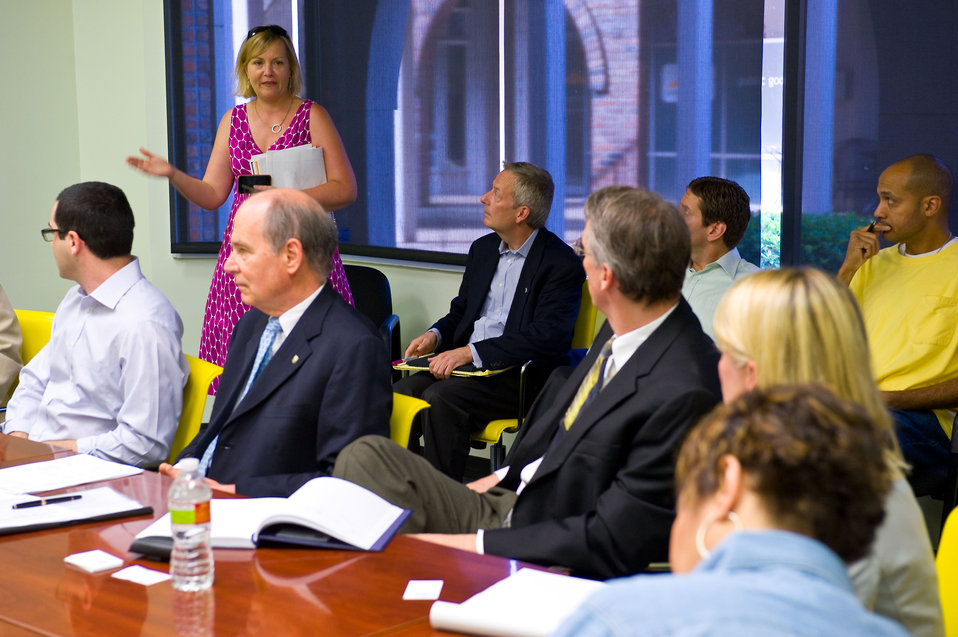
EPA Administrator Meets with Gulf Region Scientists

May 10, 2010 - EPA Administrator Lisa P. Jackson meets with Tulane University officials to discuss environmental and human health impact of the ongoing BP oil spill.